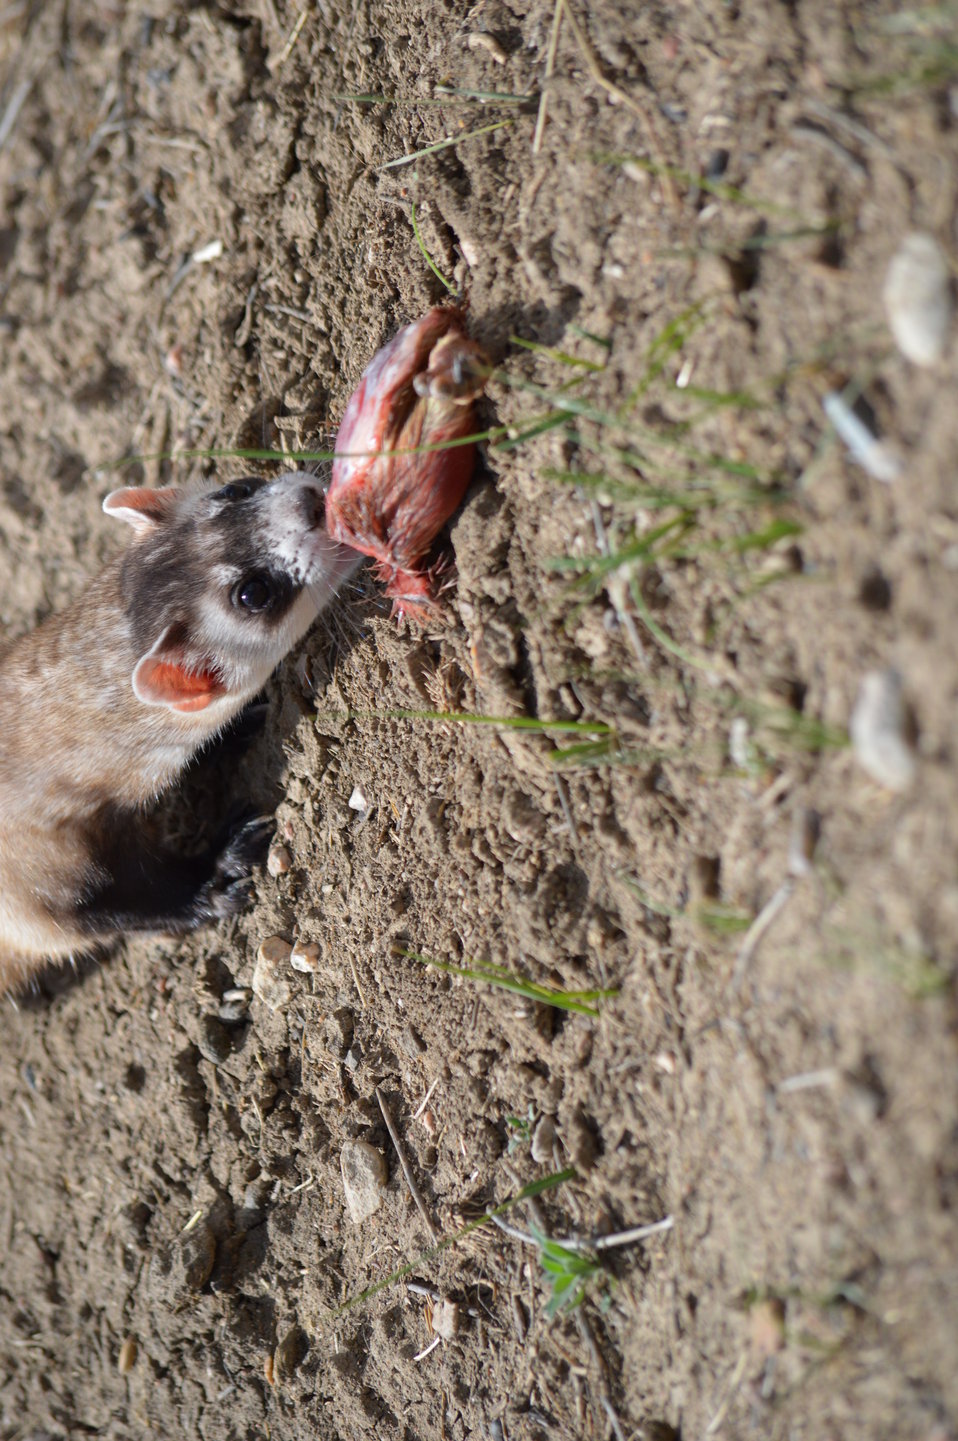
Interns visit the NBFFCC

In the summer of 2012, USFWS Region 6 interns visited the National Black-footed Ferret Conservation Center (NBFFCC) in Colorado to learn how the program reintroduces the endangered Black-footed ferret back into its native habitat.